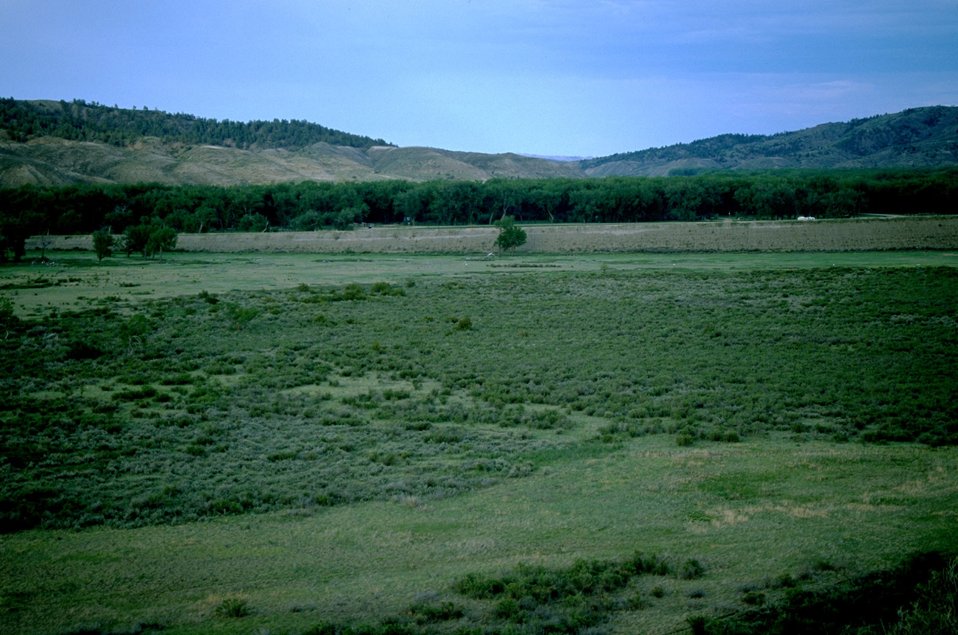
Highway embankment in the Missouri Breaks area